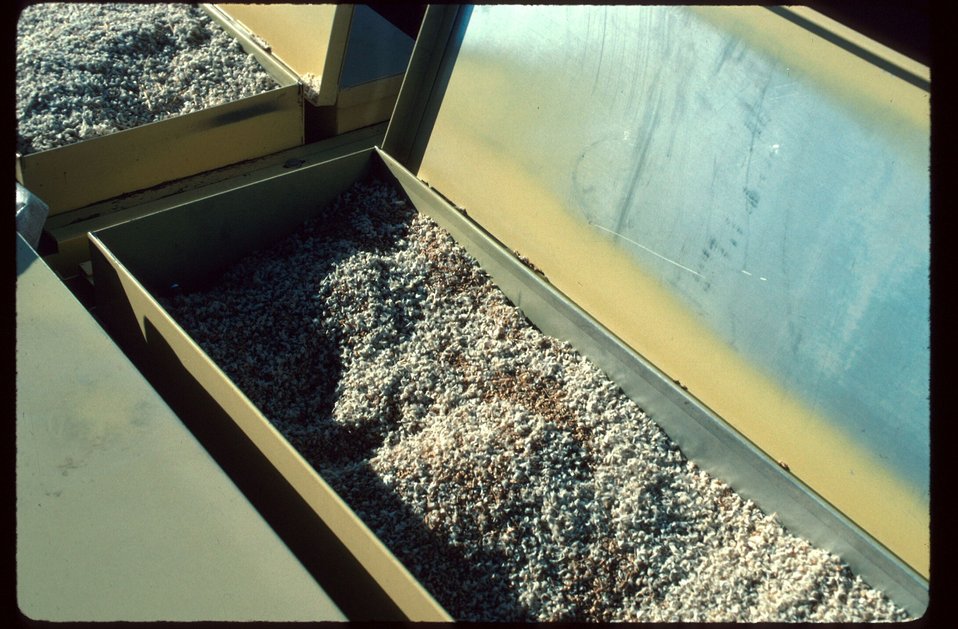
Range Restoration Project